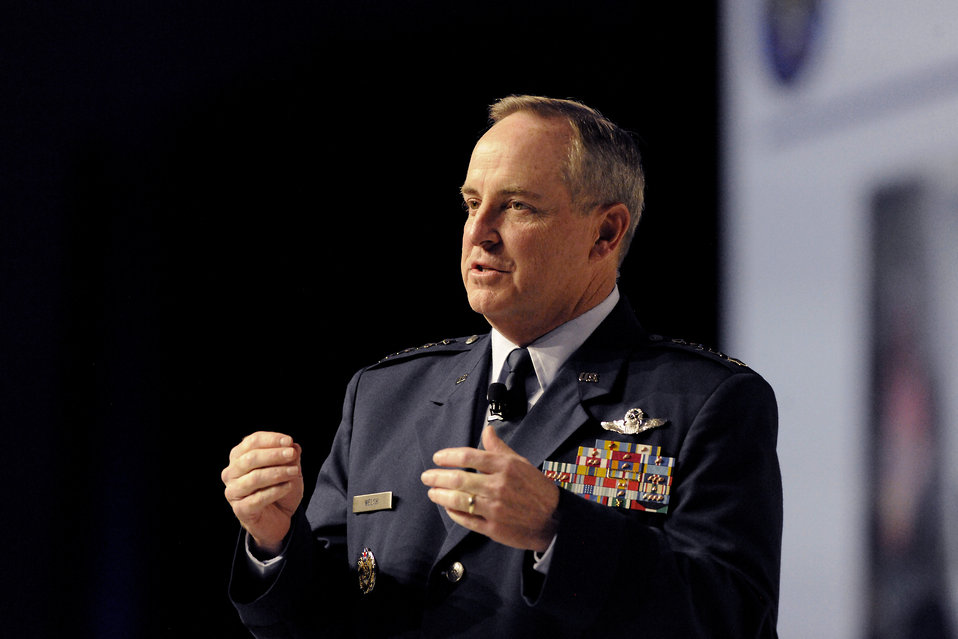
CSAF talks Air Force innovation, evolution at AFA Conference

Air Force Chief of Staff Gen. Mark A. Welsh III presents the